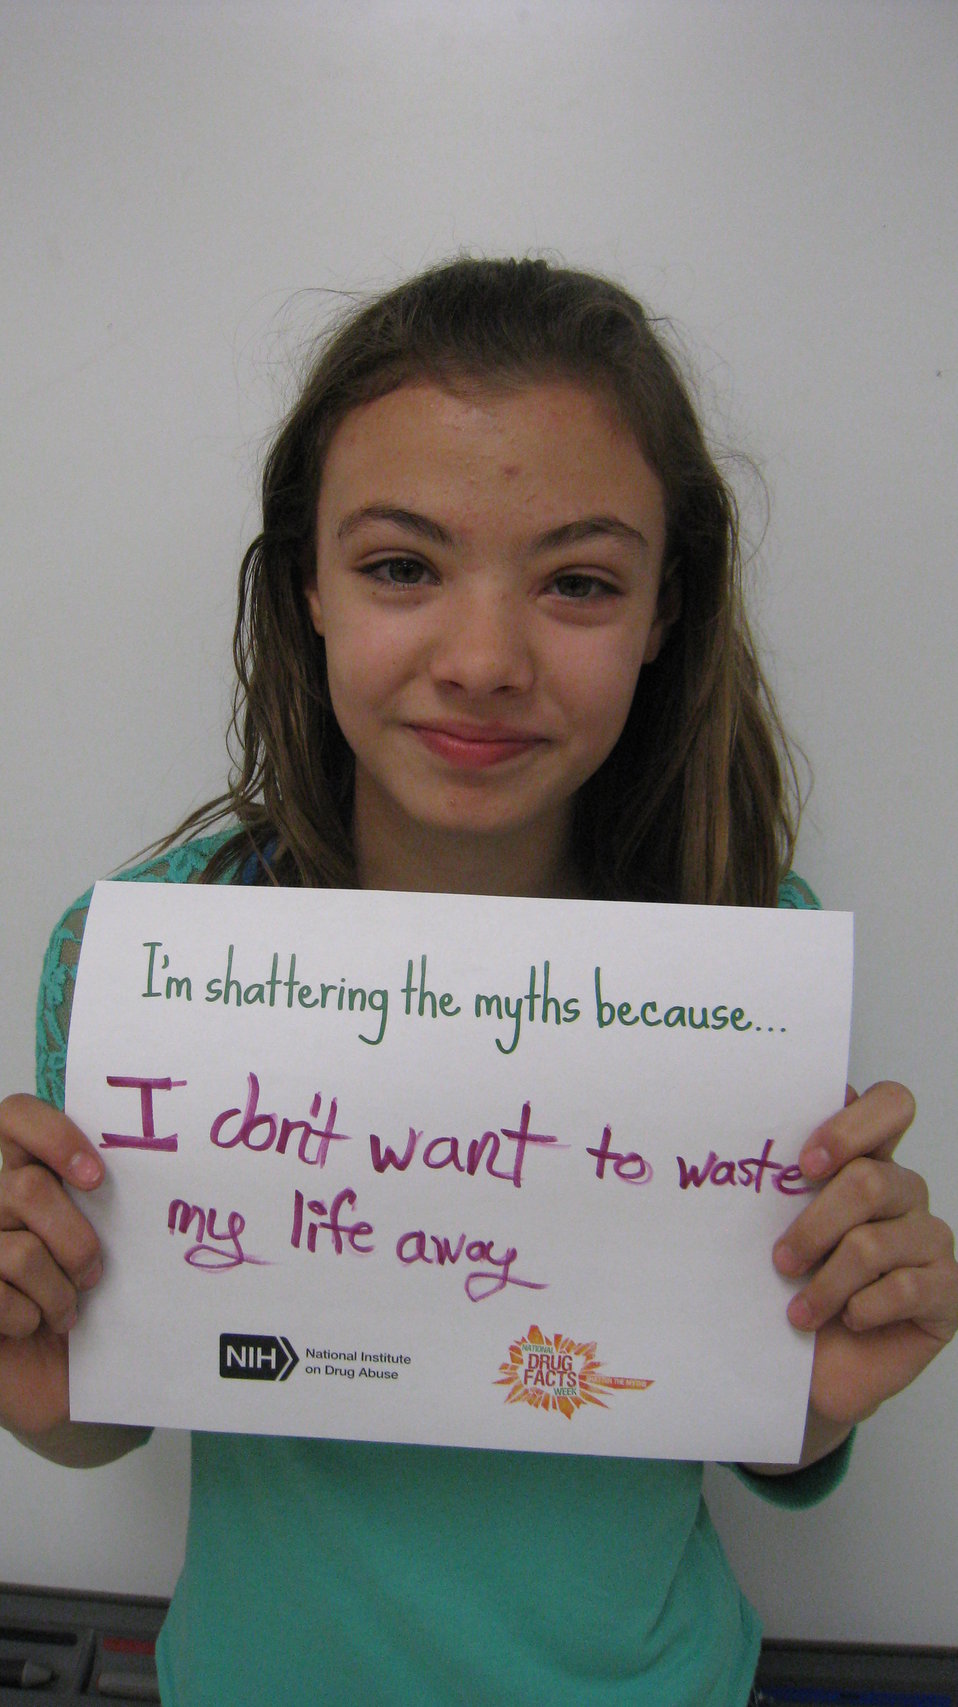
I'm Shattering the Myths Because...

Teenagers from the Van Buren County SAFE Coalition's, Youth Leadership Council (YLC) in Keosauqua, Iowa participate in various events during National Drug Facts Week, 2014.